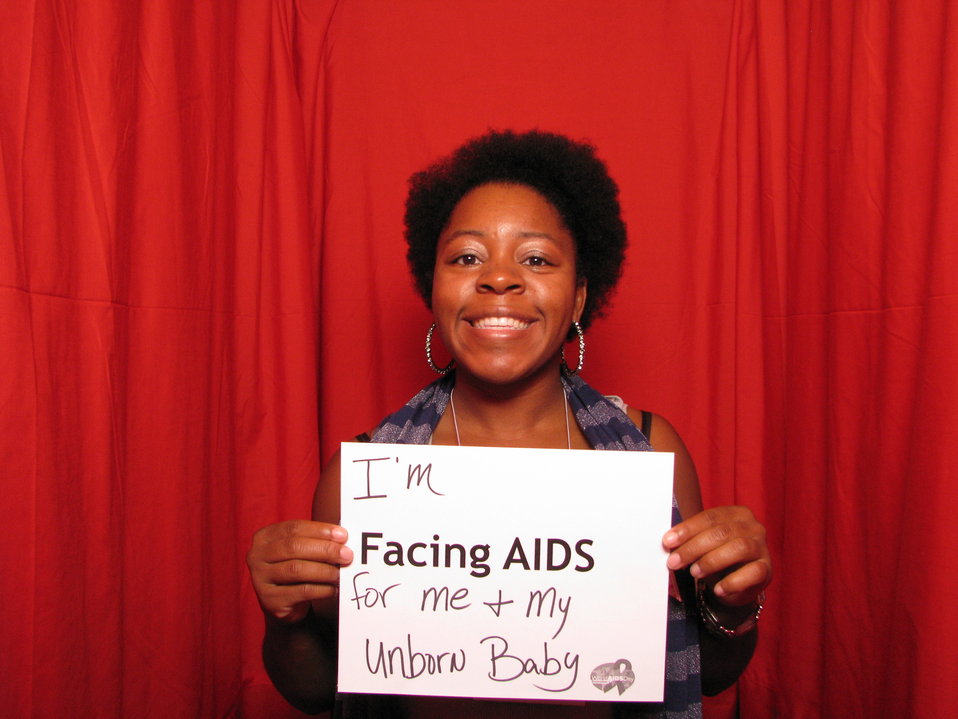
I'm FACING AIDS for me and my unborn baby.

From the AIDS.gov photo booth at the U.S. Conference on AIDS, September 2010 (Orlando, FL).